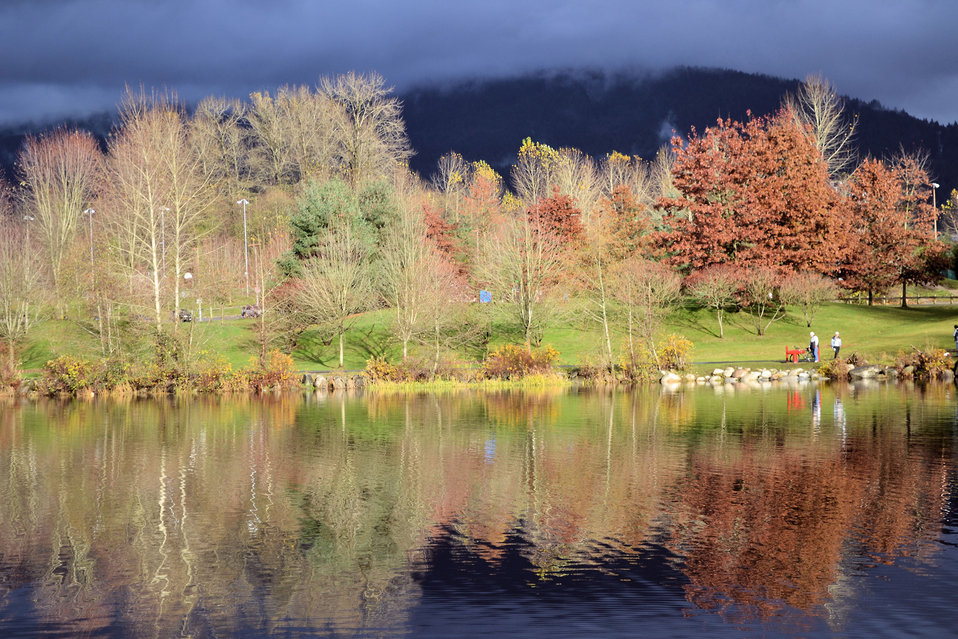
La farge lake coquitlam, bc, canada.